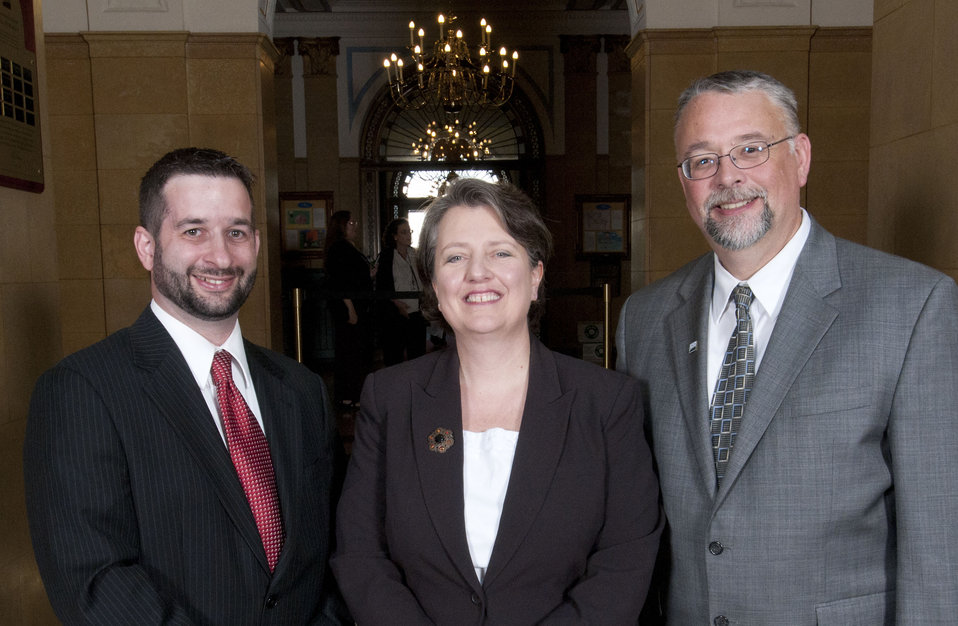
Veterinary Medicine Loan Repayment Program Team, National Institute of Food and Agriculture, Washington, DC. Gary B. Sherman, Group Leader. For reducing the shortage of food supply veterinarians in rural areas with critical need by developing and implementing the Veterinary Medicine Loan Repayment Program.
On September 14, 2011 in the patio of the Whitten Building Patio of the US Department of Agriculture in Washington, DC.